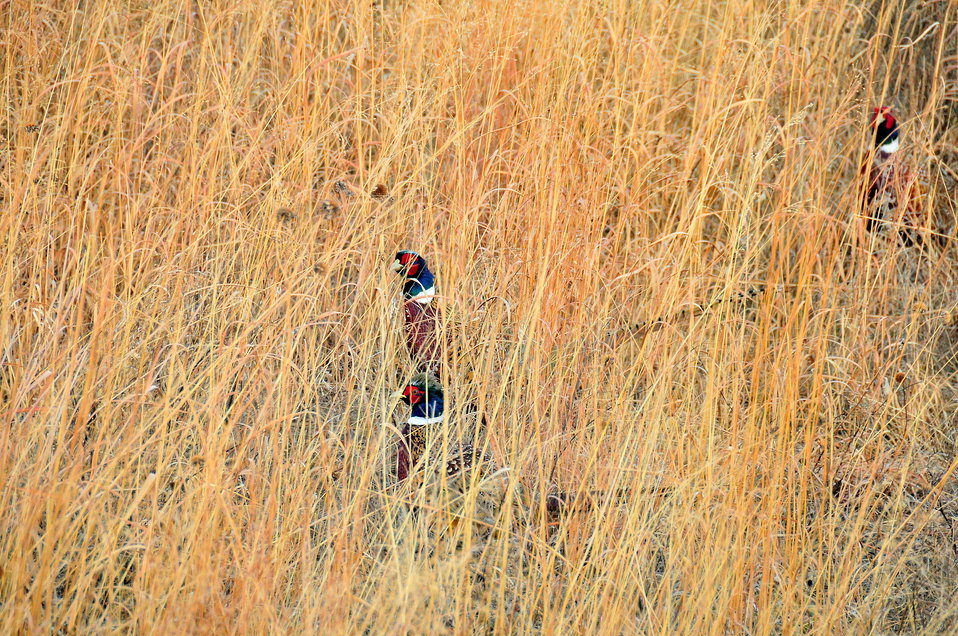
Ring necked Pheasant Roosters in Big Bluestem 1

Ring-necked pheasants head to an evening roost in native prairie near Lacreek NWR.